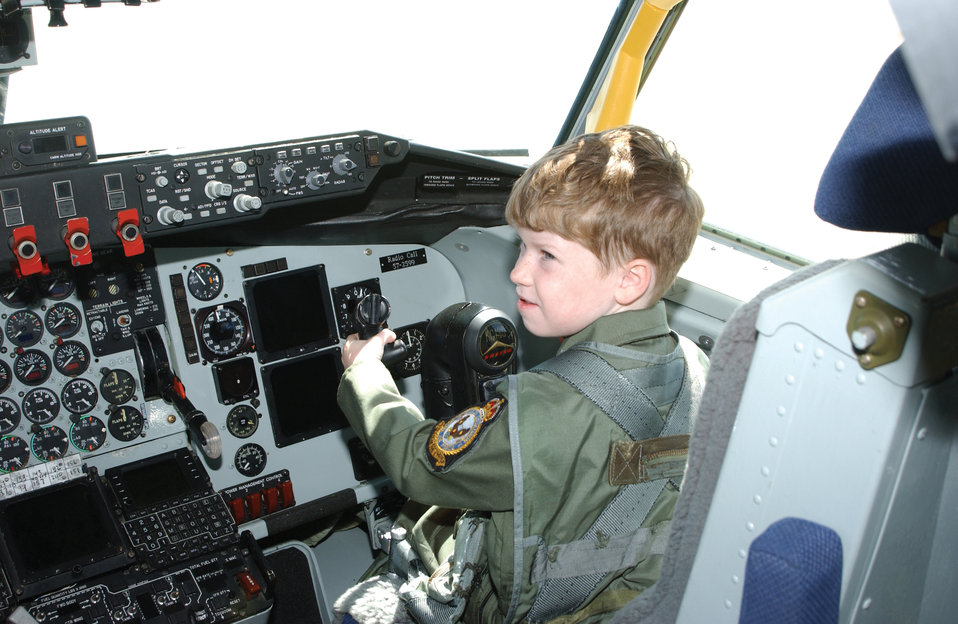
5-year-old cancer survivor plays pilot for a day

SEYMOUR JOHNSON AIR FORCE BASE, N.C. -- Evan Moriarty gets pilot training in a KC-135 Stratotanker from 916th Air Refueling Wing Airmen here April 15. The jet was a stop during the daylong tour he and his family made around base as he experienced a day as a pilot.